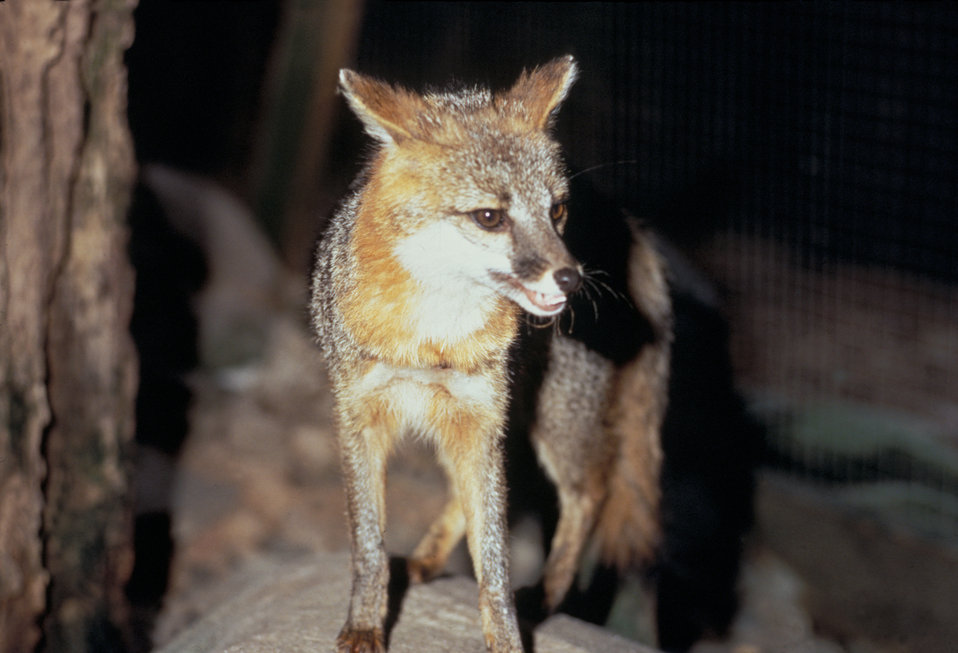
Foxes too, may be possible vectors of the rabies virus, transmitting it to humans and other animals.